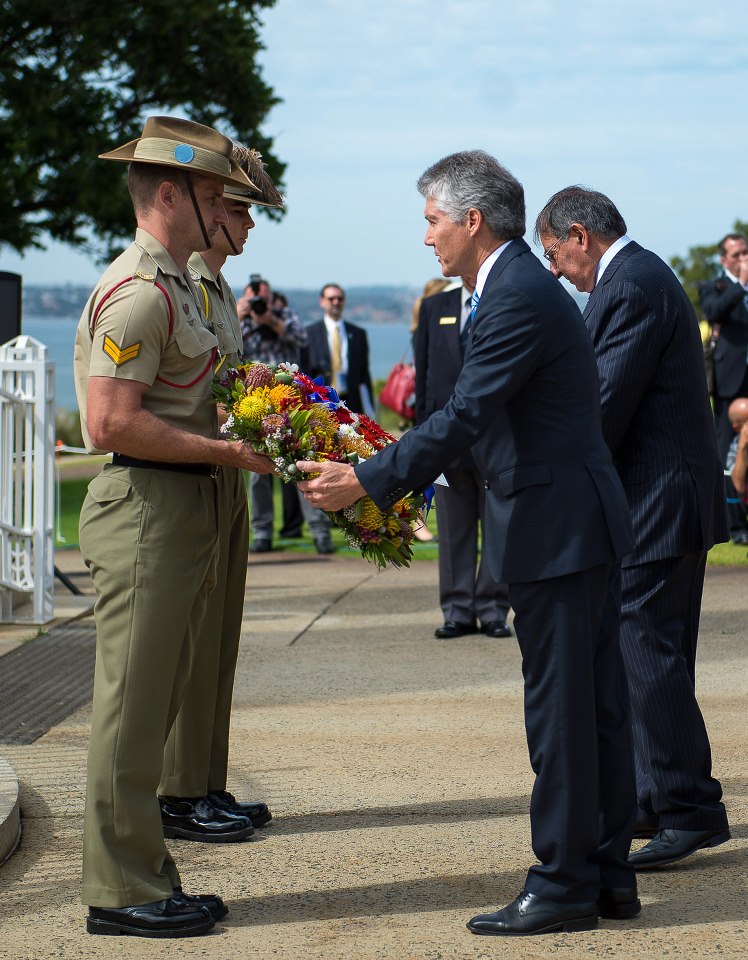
Australian Minister Smith and Secretary Panetta at a Wreath-Laying Ceremony

U.S. Secretary of Defense Leon Panetta stands with Australian Defense Minister Stephen Smith during a wreath-laying ceremony at the State War Memorial at Kings Park and Botanic Garden in Perth, Australia, November 14, 2012. [U.S. Embassy in Canberra, Australia photo by Travis Longmore/ Public Domain]